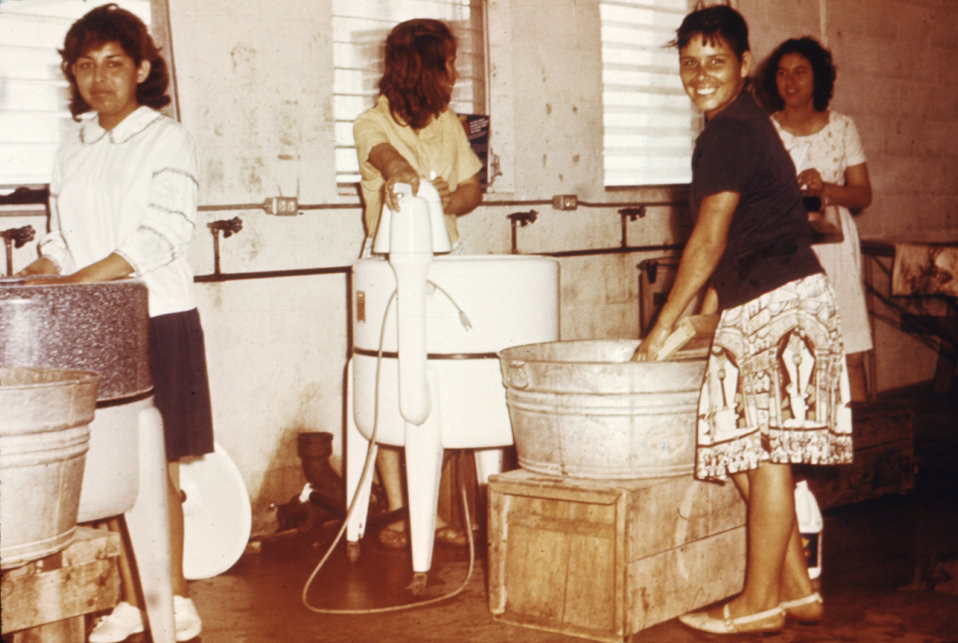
This was part of a series used to familiarize public health inspectors with sanitation conditions in migrant worker camps.